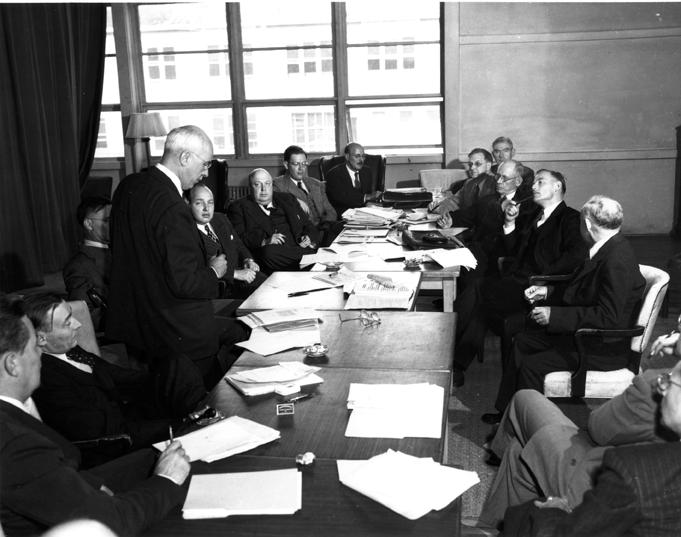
Meeting at Oak Ridge